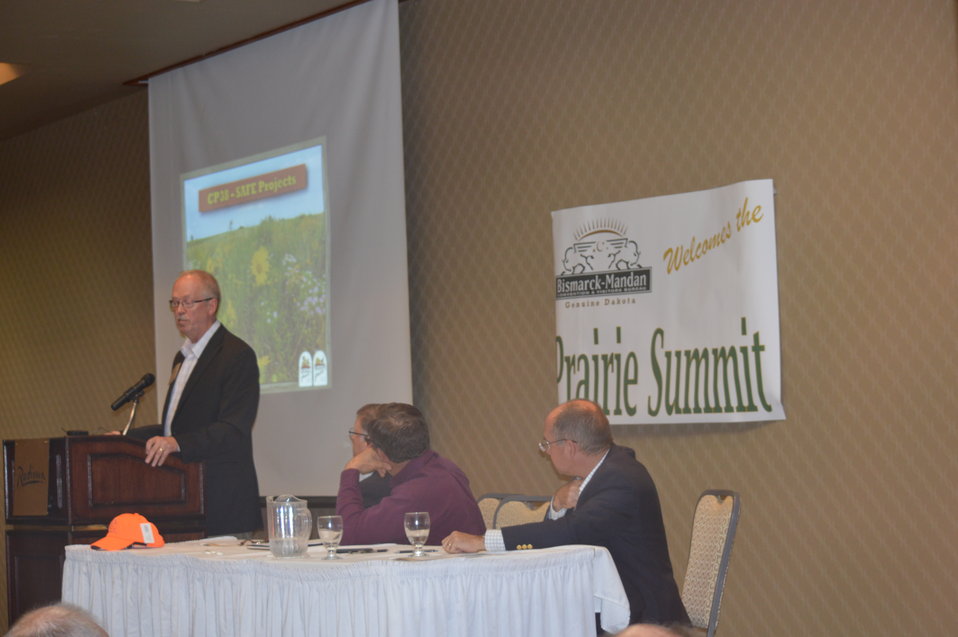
Dave Nomsen

Through the efforts of Ducks Unlimited and its partners, a Prairie Summit meeting was held in June 2013 in Bismarck, North Dakota, bringing key stakeholders to the table to identify and begin to address the immediate needs of the overall effort to conserve wetlands and grasslands, as well as bring media attention to the issues at hand and the urgency of the situation.